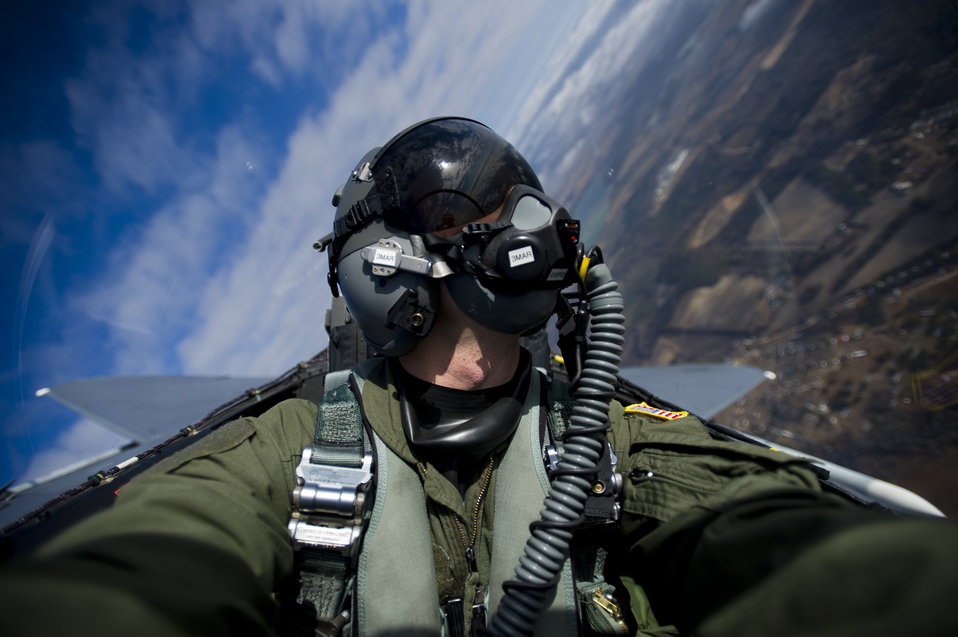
What a view!

Staff Sgt. Michael Keller takes a self portrait in an F-15E Strike Eagle during a local training mission over North Carolina, Dec. 17, 2010. He is an aerial combat photographer from the 1st Combat Camera Squadron at Joint Base Charleston, S.C.